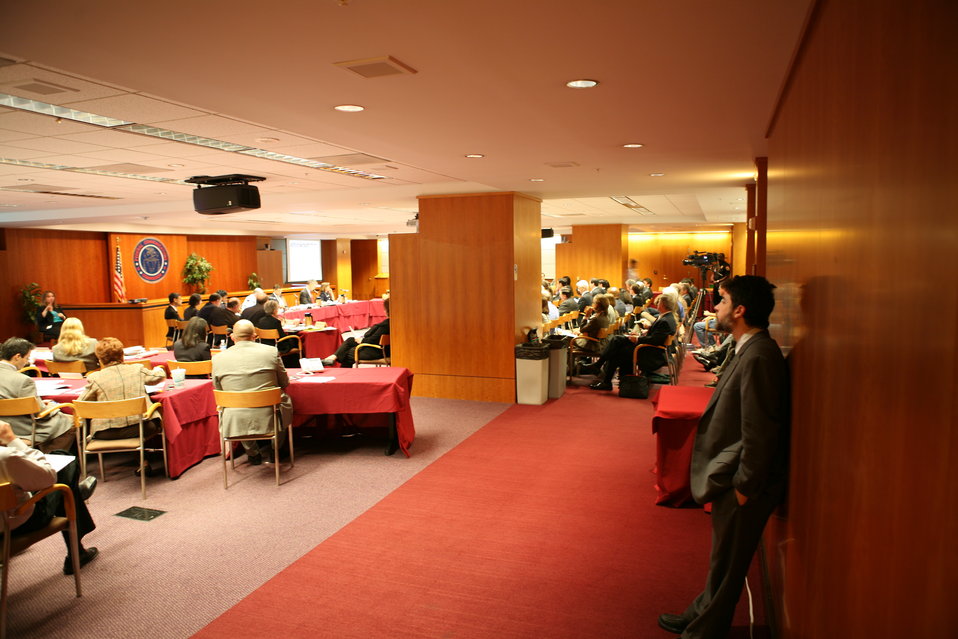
Broadband Midterm Review 9-29-09